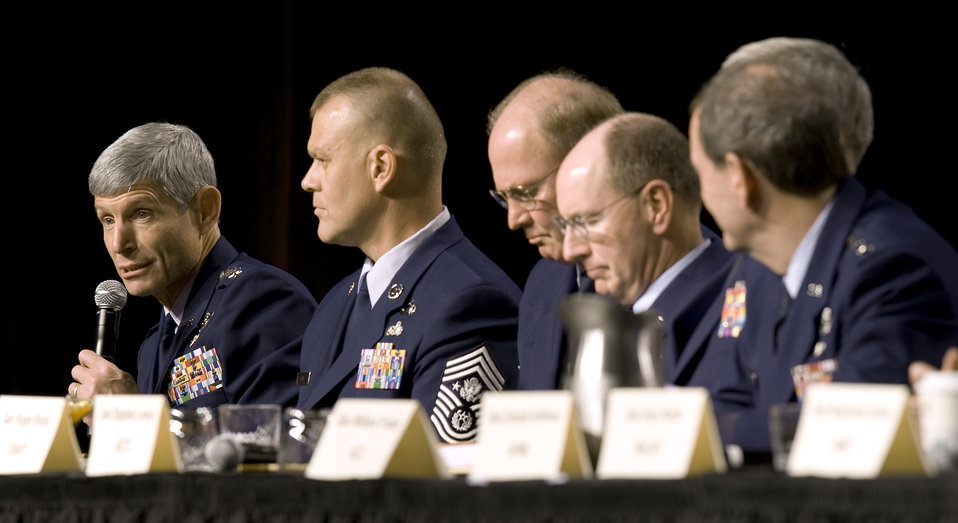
Air Force leaders discuss challenges, achievements

Air Force Chief of Staff Gen. Norton Schwartz (left) answers a question during a four-star forum Sept. 15, 2010, at the Air Force Association 2010 Air and Space Conference and Technology Exposition at National Harbor in Oxon Hill, Md. The forum provided a chance for conference attendees to pose questions directly to Air Force senior leaders.